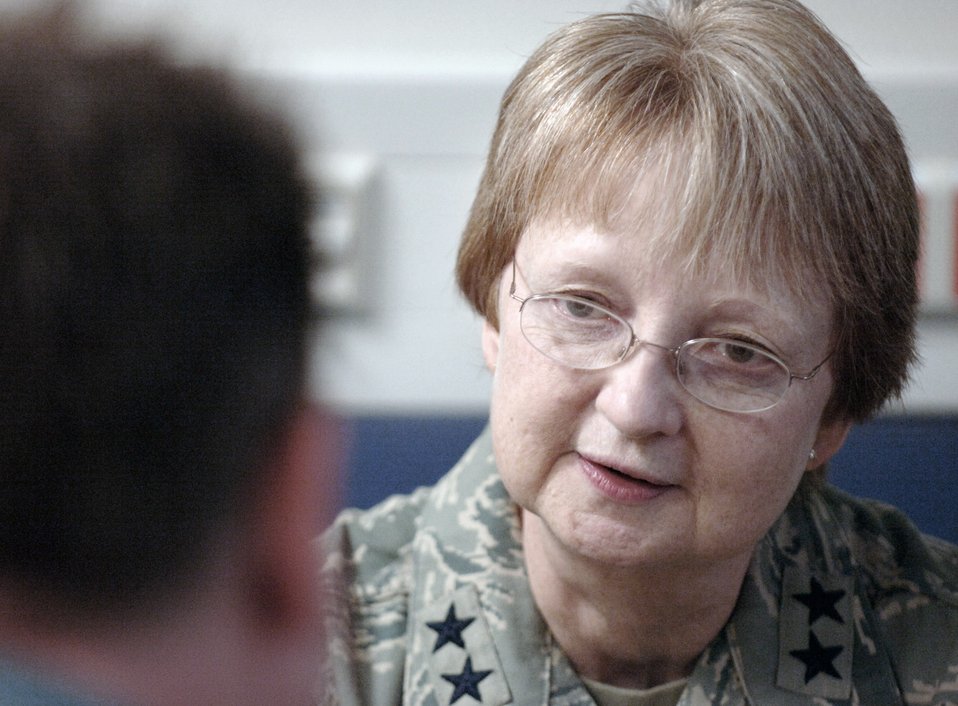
Assisant Air Force Surgeon General visits LRMC, Germany

During her visit with staff and patients at Landstuhl Regional Medical Center, Germany, Dec. 12, Maj. Gen. Melissa A. Rank, the Assistant Air Force Surgeon General, Medical Force Development and Nursing Services, comments on her early career experiences treating wounded Marines in the aftermath of the bombings in Beirut.